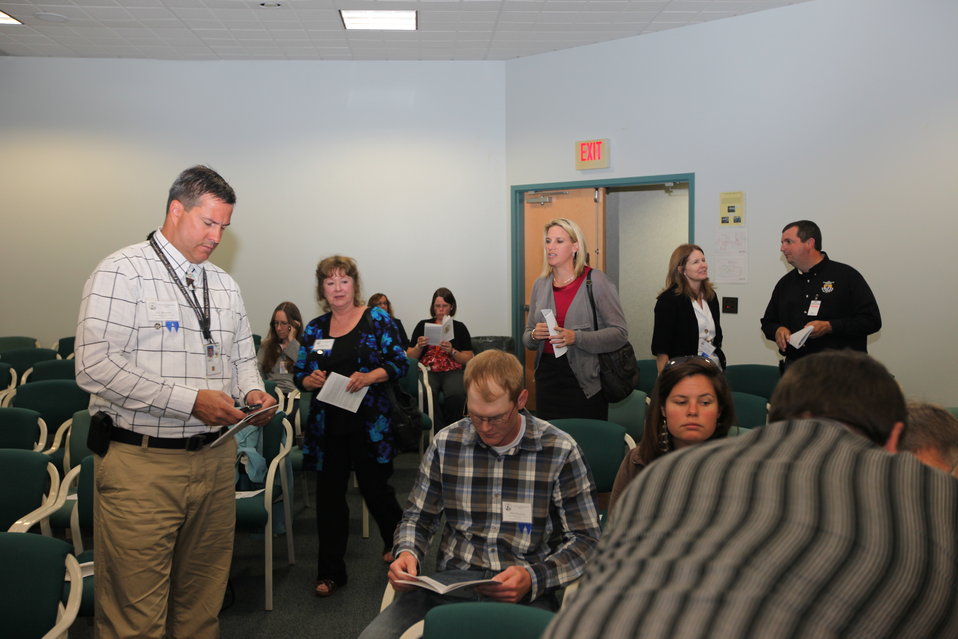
Northeast Region Employee Appreciation Awards